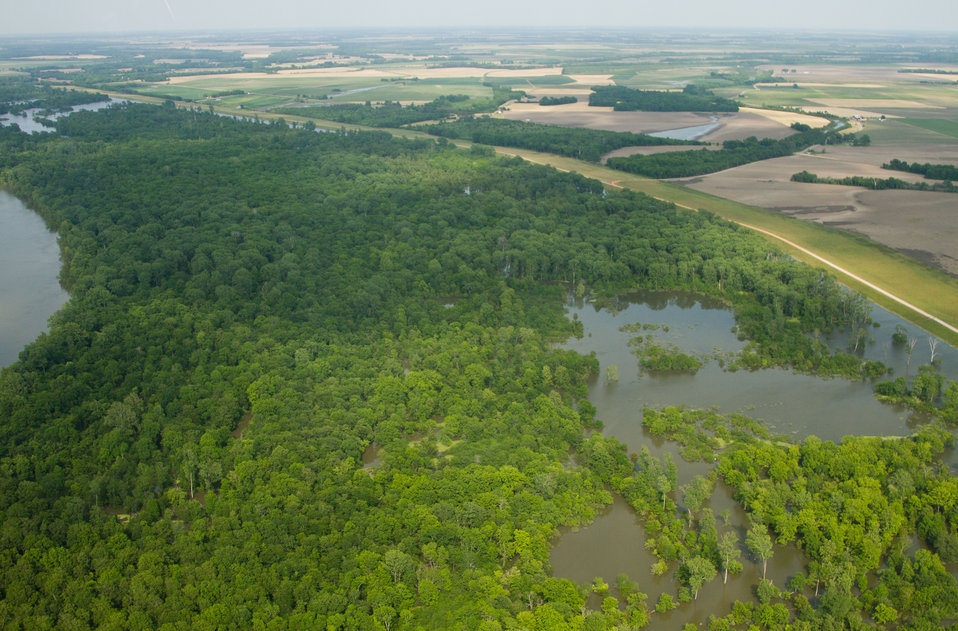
Aerial view of Mississippi River flood of farms, wilderness, and populated areas, on Thursday, May 19, 2011. from the MS side. Aerial platform was a UH-60 Blackhawk commanded by Col. Kennedy and his flight crew from the Army Aviation Support Facility #1 at Hawkins Field in Jackson, MS.